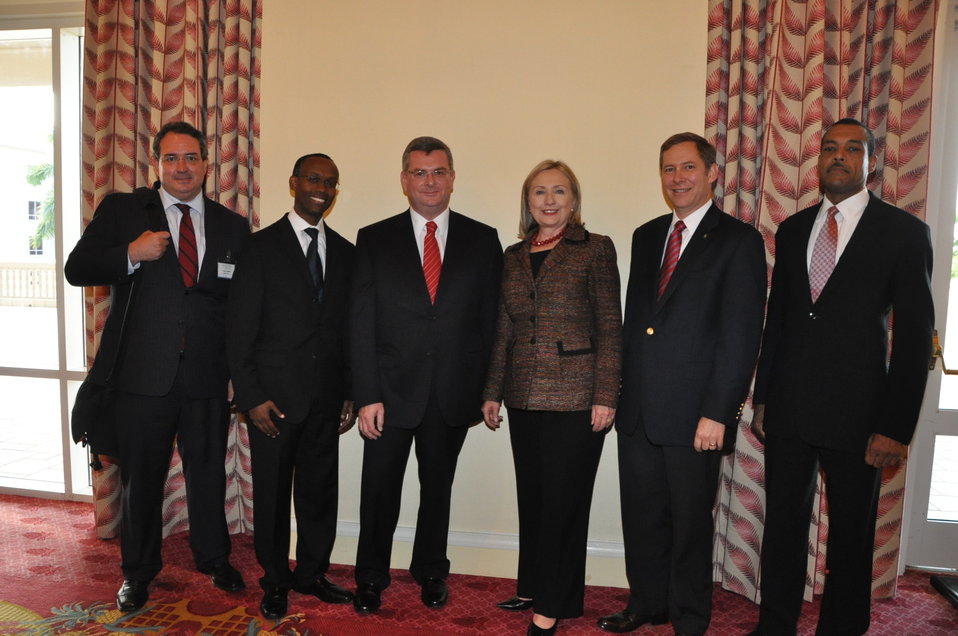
Secretary Clinton Poses for a Photo With Caribbean IDEA Markteplace Partners

U.S. Secretary of State Hillary Rodham Clinton poses for a photo with Caribbean IDEA Marketplace Partners, in Montego Bay, Jamaica, on June 22, 2011. From left to right in the photo are Executive Director for the United States of the Inter-American Development Bank Gustavo Arnavat, Director of the Global Partnership Initiative in the office of the Secretary of State Thomas Debass, Group Chief Executive Officer and Board Director Colm Delves, U.S. Secretary of State Hillary Rodham Clinton, President and CEO of The Bank of Nova Scotia Jamaica Bruce Bowen, and Manager of the Caribbean Country Department of the Inter-American Development Bank Gerard Johnson.